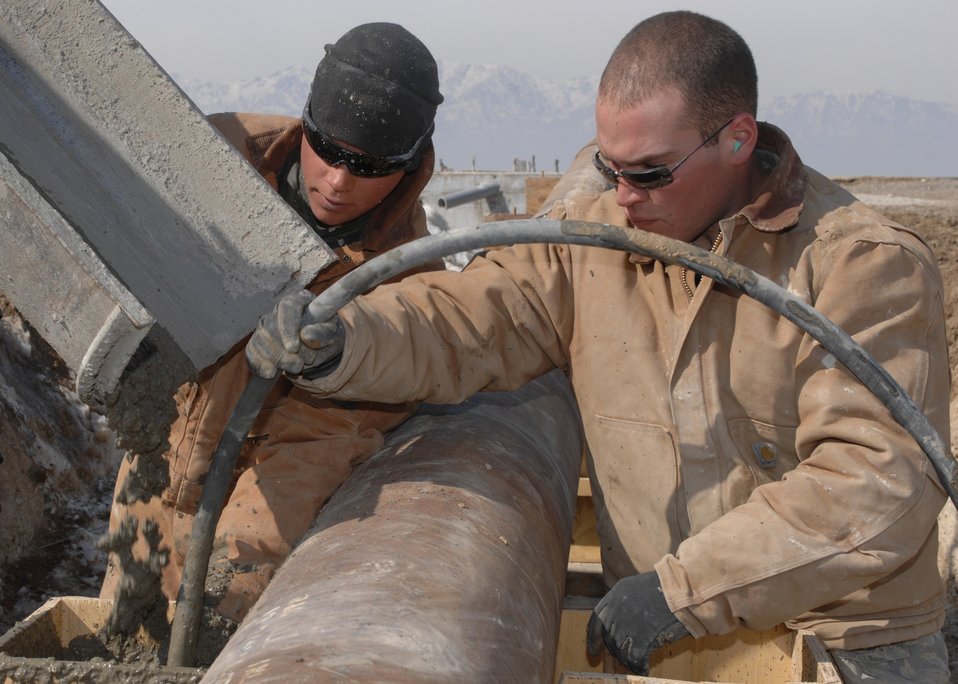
RED HORSE team improves flightline operations

Senior Airman Steven Moss and Staff Sgt. Jorge Zequeira pump cement while working construction on a barrier arresting kit at Bagram Air Base, Afghanistan, Feb. 13. Once the BAK 12 is finished, it will be used to stop aircraft with tail hooks that have hydraulics or brake problems. Airman Moss is from 819th RED HORSE Squadron, Malmstrom Air Force Base, Mont., and deployed to the 1st Expeditionary RED HORSE Group as a structural journeyman. Sergeant Zequeira's home unit is the 11th Civil Engineer Squadron at Bolling Air Force Base, D.C. and is deployed to 1st Expeditionary REDHORSE Group as a power production journeyman.